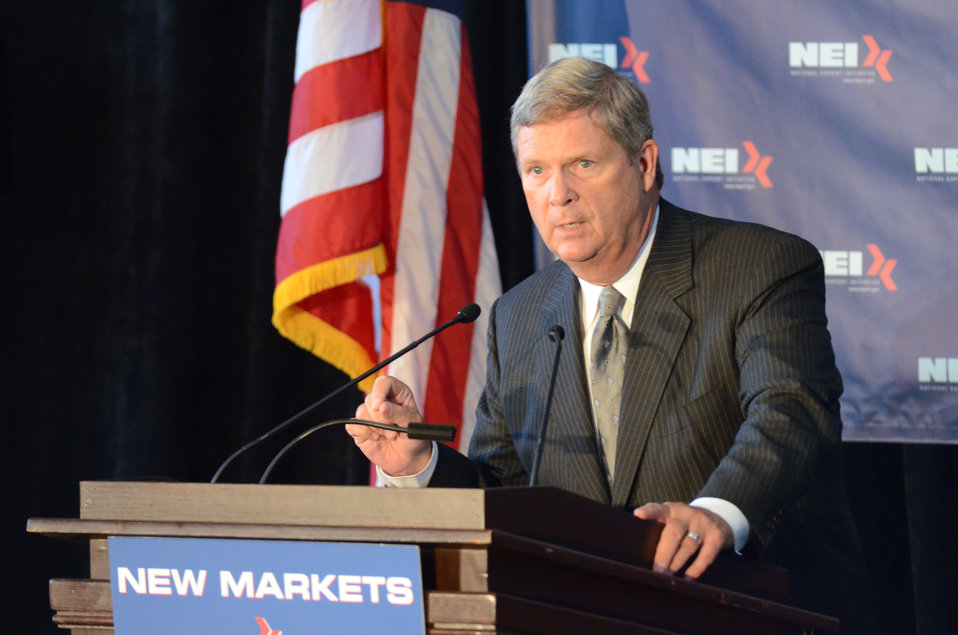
Agriculture Secretary Tom Vilsack speaks at the National Export Initiative (NEI) Small Business Tour in Milwaukee, WI, on Wednesday, August 3, 2011. An important goal of the NEI is to provide additional assistance to small and medium-sized businesses, which are major drivers of job creation. The NEI is assisting small and medium-sized businesses win more foreign government contracts, find buyers worldwide, participate in more trade missions and trade shows, receive more export financing, and learn new ways to sell products and services overseas.